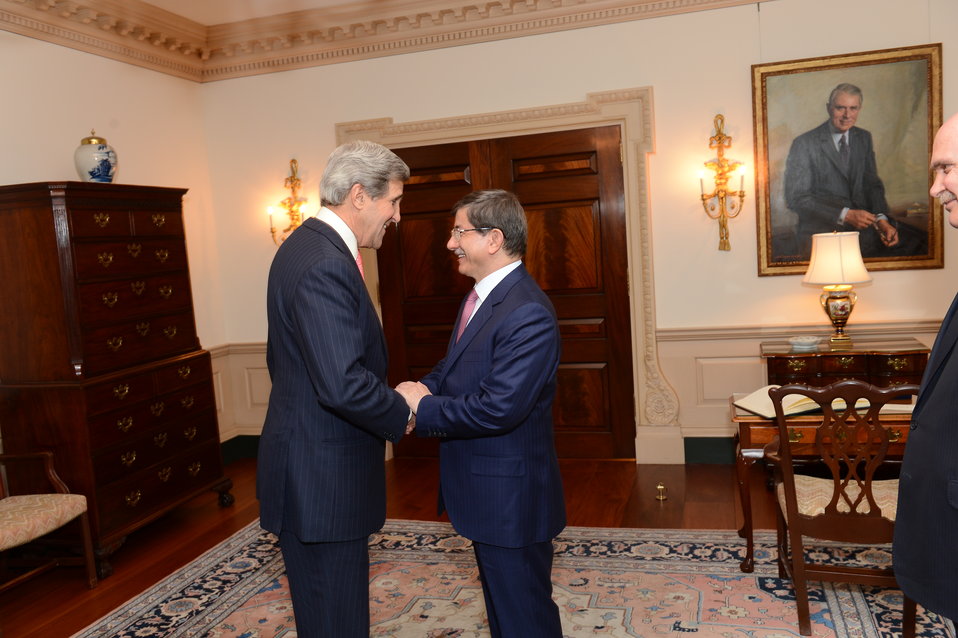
Secretary Kerry Meets With Turkish Foreign Minister Davutoglu

U.S. Secretary of State John Kerry meets with Turkish Foreign Minister Ahmet Davutoglu at the U.S. Department of State in Washington, D.C., on May 16, 2013.